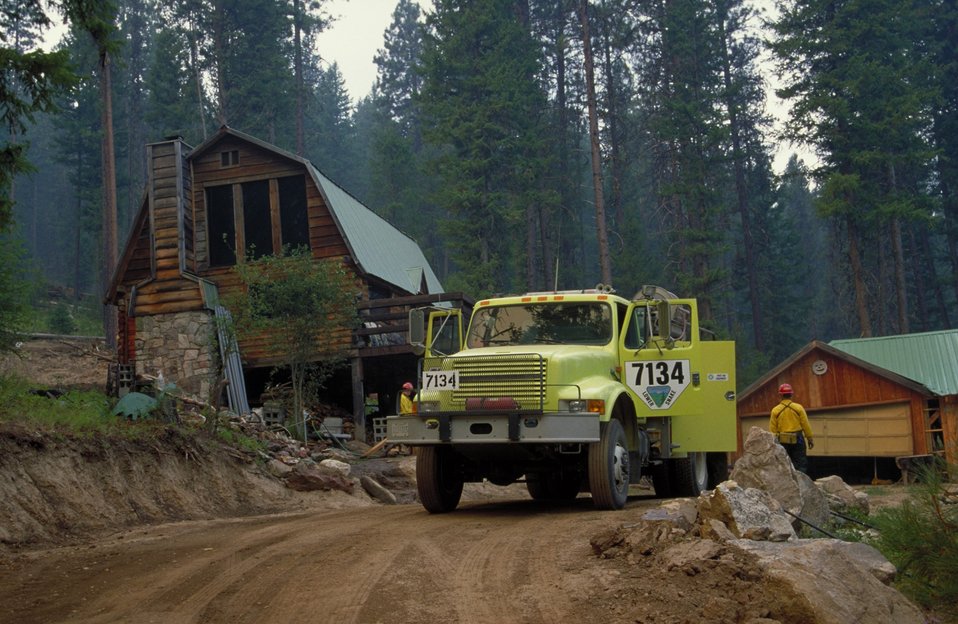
Urban interface BLM Heavy Engine Fire Season 2000 Lower Snake River District LSRD